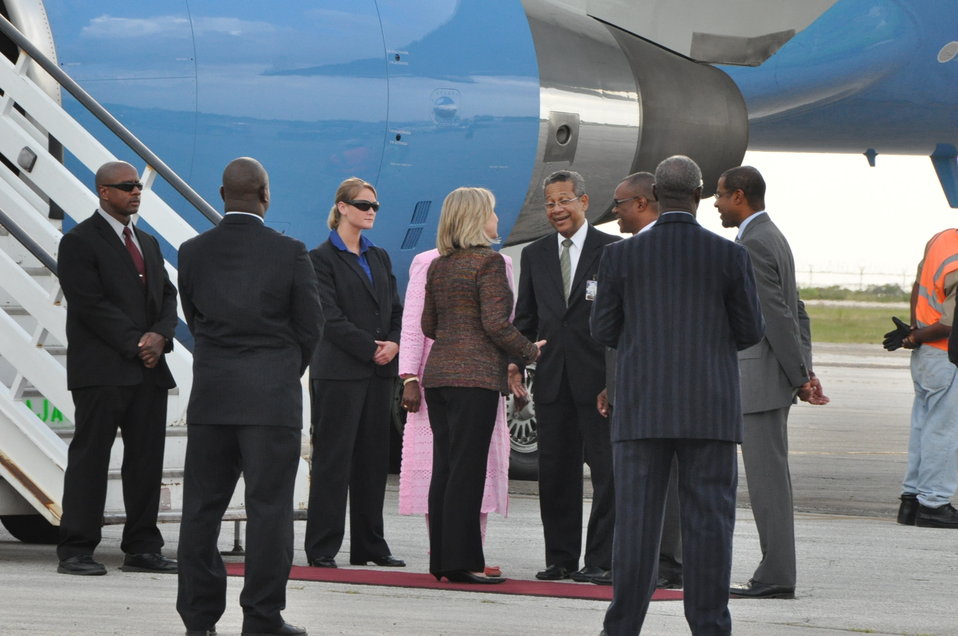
Secretary Clinton Is Greeted By Ambassador Bridgewater, Jamaican Foreign Minister Baugh, and Protocol Director Allicock

U.S. Secretary of State Hillary Rodham Clinton is greeted by U.S. Ambassador to Jamaica Pamela Bridgewater, wearing pink, Jamaican Foreign Minister Kenneth Baugh, and Jamaican Ministry of Foreign Affairs Protocol Director Ricardo Allicock upon her arrival to Montego Bay, Jamaica, on June 22, 2011.